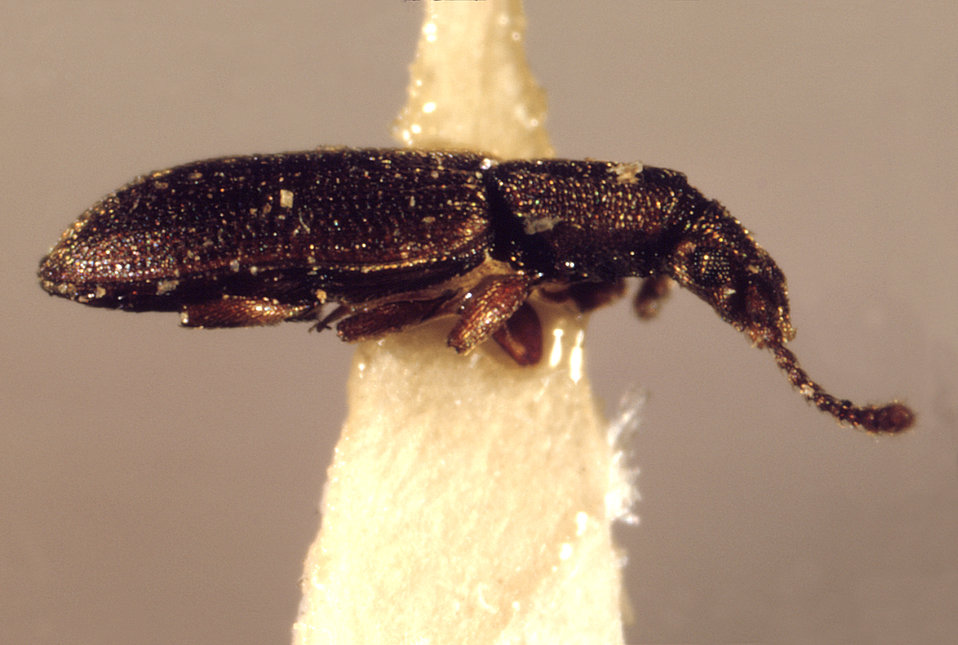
This is a lateral view of an Oryzaephilus surinamensis, otherwise known as a 'sawtoothed grain beetle'; Mag. 7.1X.